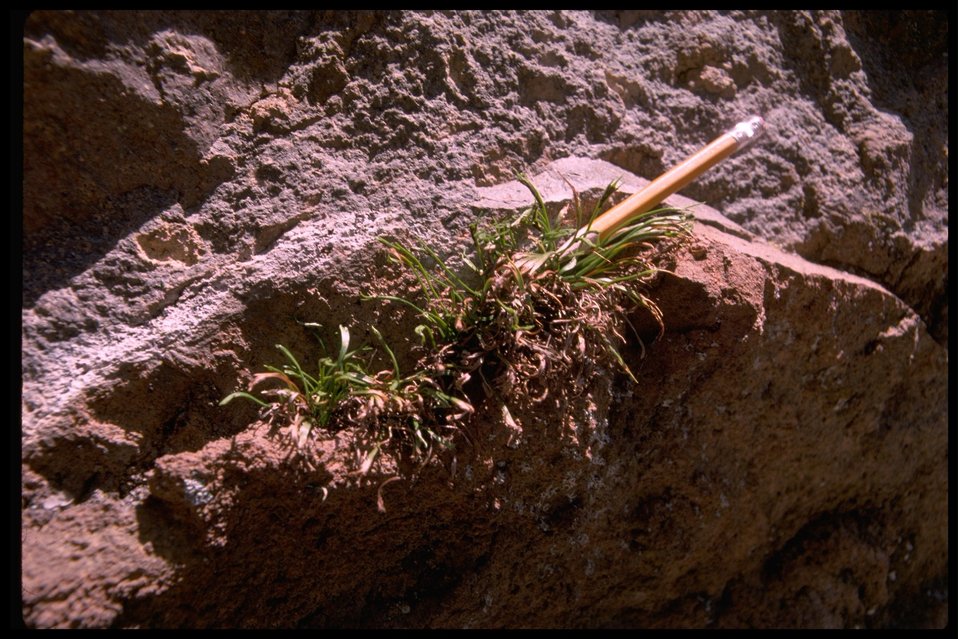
Farshot of grass fern (Asplenium septentrionale).